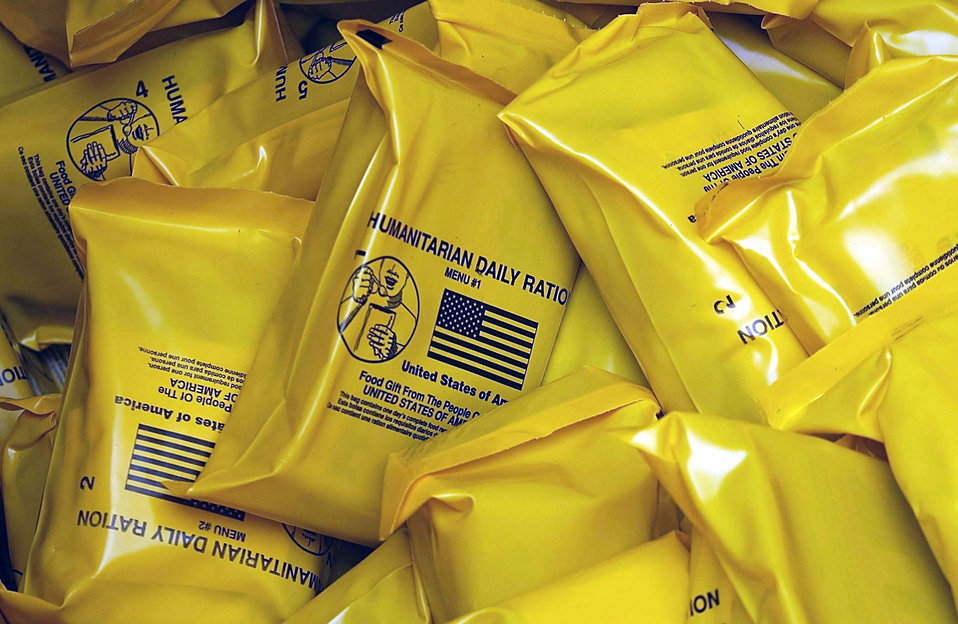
Dropping Rations

OPERATION ENDURING FREEDOOM -- Humanitarian daily rations were containerized and placed on board a C-17 Globemaster III on Oct. 4, 2001 at Ramstein Air Base, Germany. The humanitarian supplies were airdropped Oct. 7 over eastern Afghanistan as part of Operation Enduring Freedom.